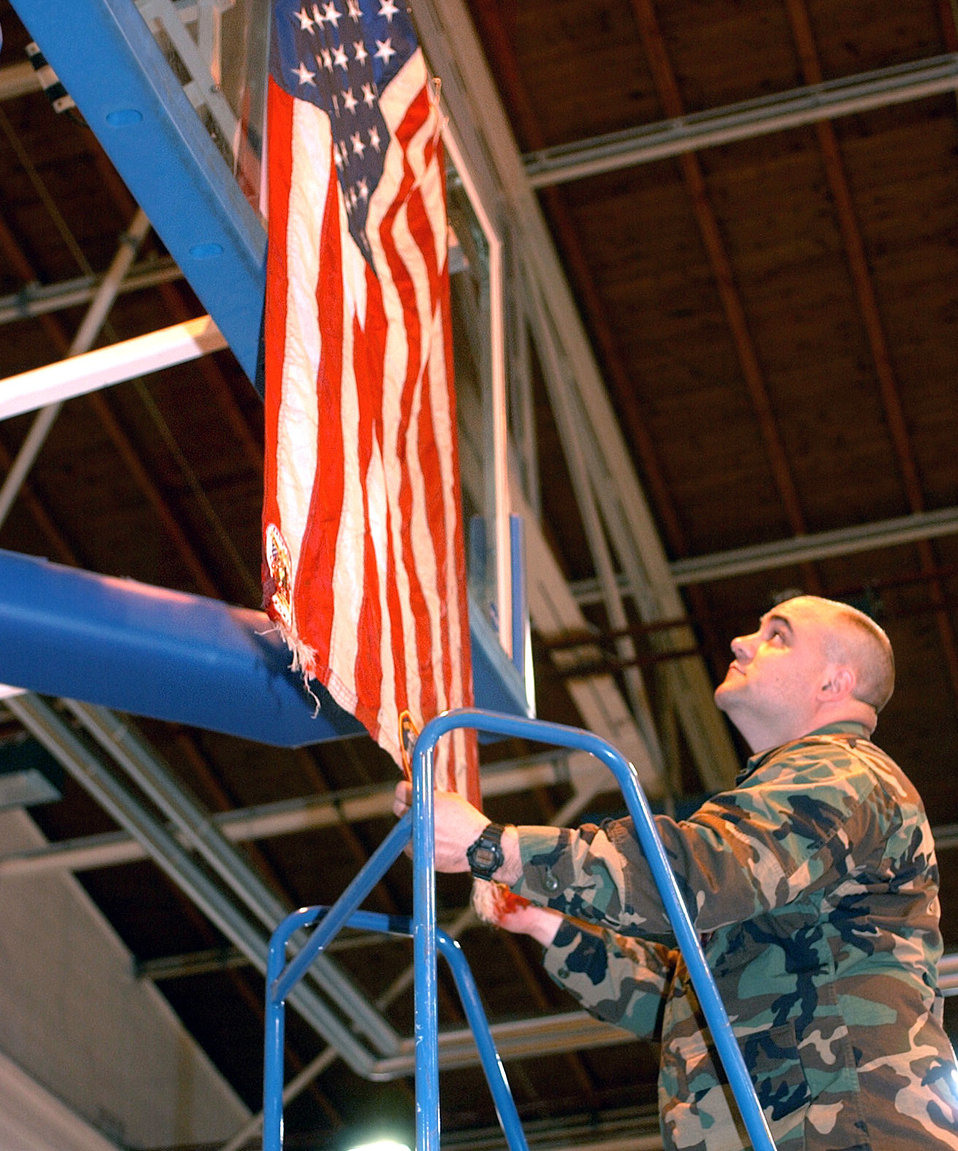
I remember

RAMSTEIN AIR BASE, Germany -- Capt. Eric Szillus, a clinical nurse with the 514th Aeromedical Staging Squadron from McGuire AFB, hangs an American flag flown at Ground Zero in the Ramstein Southside Fitness Center.